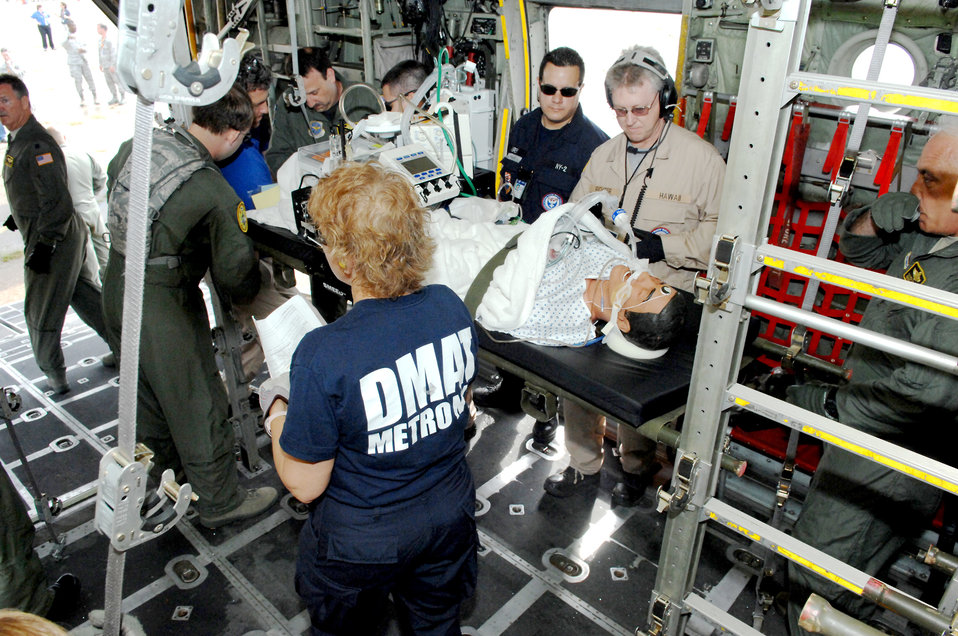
State, federal teams prepare for hurricane season

Members of the disaster aeromedical staging facility load a simulated patient onto a C-130 Hercules during an evacuation exercise May 19, 2010, at the New Orleans Lakefront Airport, La. The exercise was controlled by officials from the Louisiana Department of Health and Hospitals with the help of multiple military counterparts including Air Mobility Command and U.S. Transportation Command members from Scott Air Force Base, Ill.